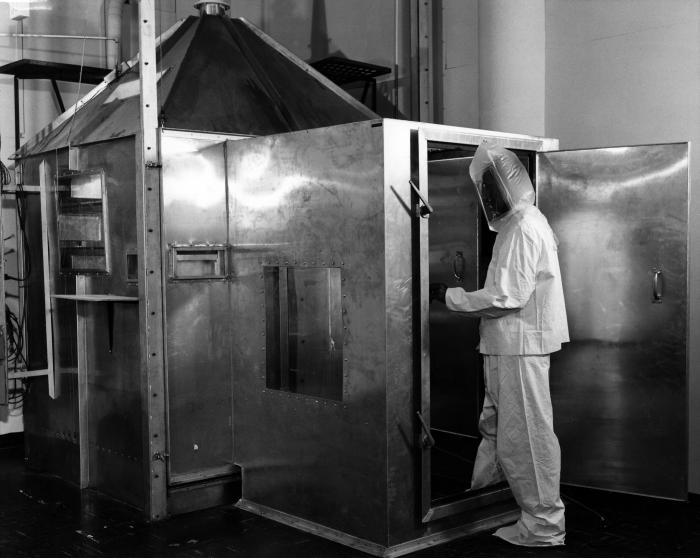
This historic image, provided by the Center for Disease Control's (CDC), National Institute for Occupational Safety and Health (NIOSH), depicted a man who was wearing a protective suite, while entering a metal chamber, the function of which could not be determined from this photograph. The suite's material is unknown, however, it looked as if it was constructed of a type of plastic. One cannot determine if the suite was airtight, due to the overlap of the 'shirt' and 'pants', and it appeared that there was no breathing tube, or if the man was carrying a canister of source air. This image, and many others like it, was used to document the many aspects of various industrial activities, so as to better understand these workplace environments, and their associated hazards. In gaining a better understanding of workplace hazards, protocol-formulating bodies such as NIOSH, are better able to create a safer workplace through substantiation of appropriate safety regulations.